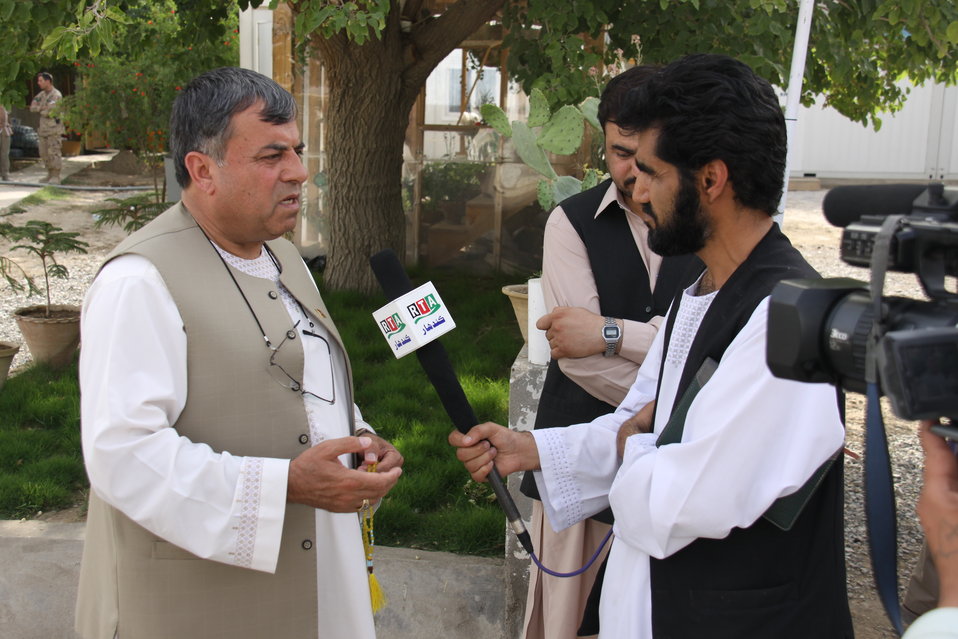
Meeting with Local Leaders in Kandahar